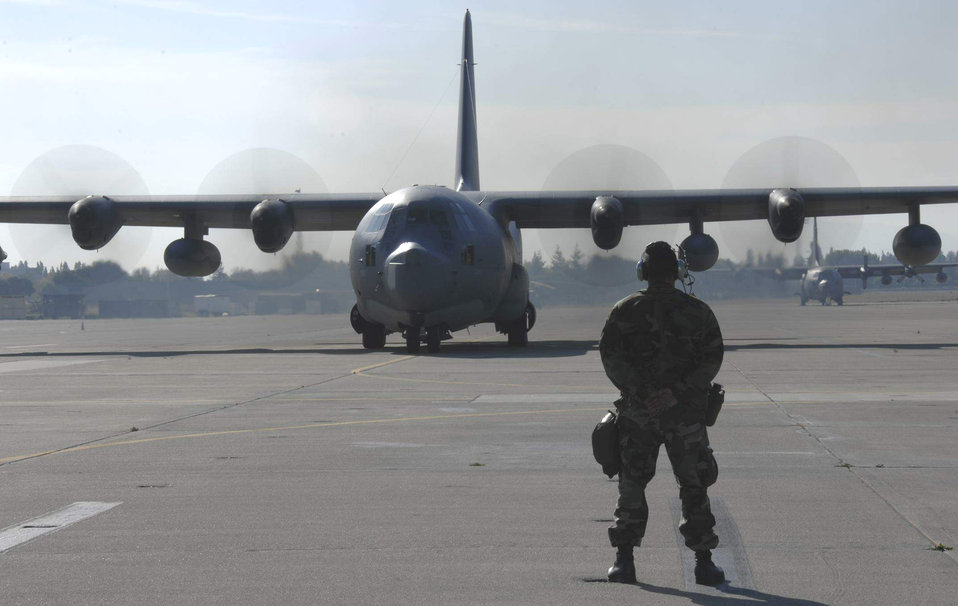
129th Rescue Wing

Two MC-130P Combat Shadow tanker aircraft from the 129th Rescue Wing at Moffett Federal Airfield, Calif., taxi on the Moffett flightline.